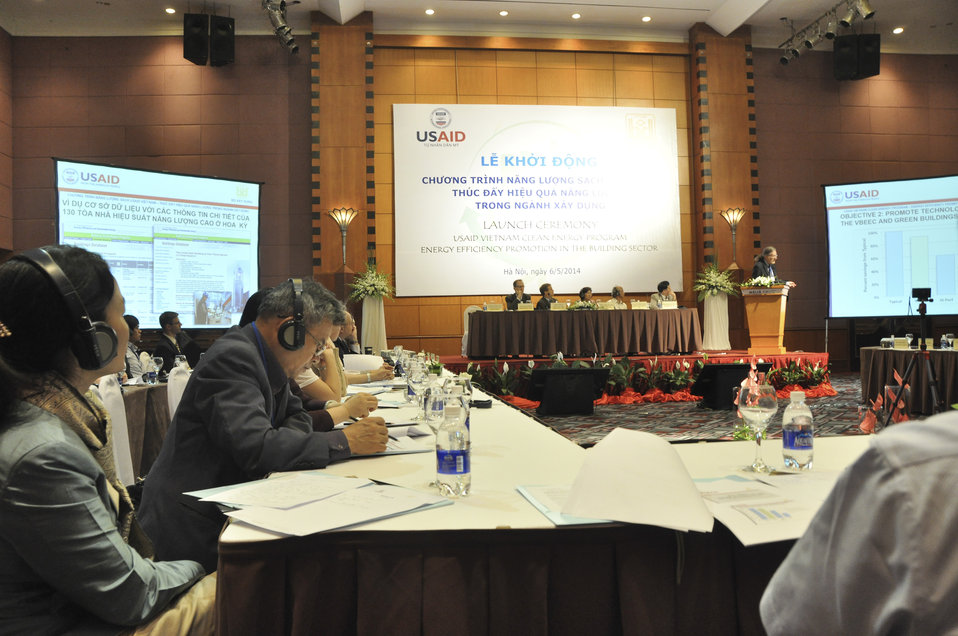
Launching of USAID Vietnam Clean Energy Program

Hanoi, May 6, 2014.